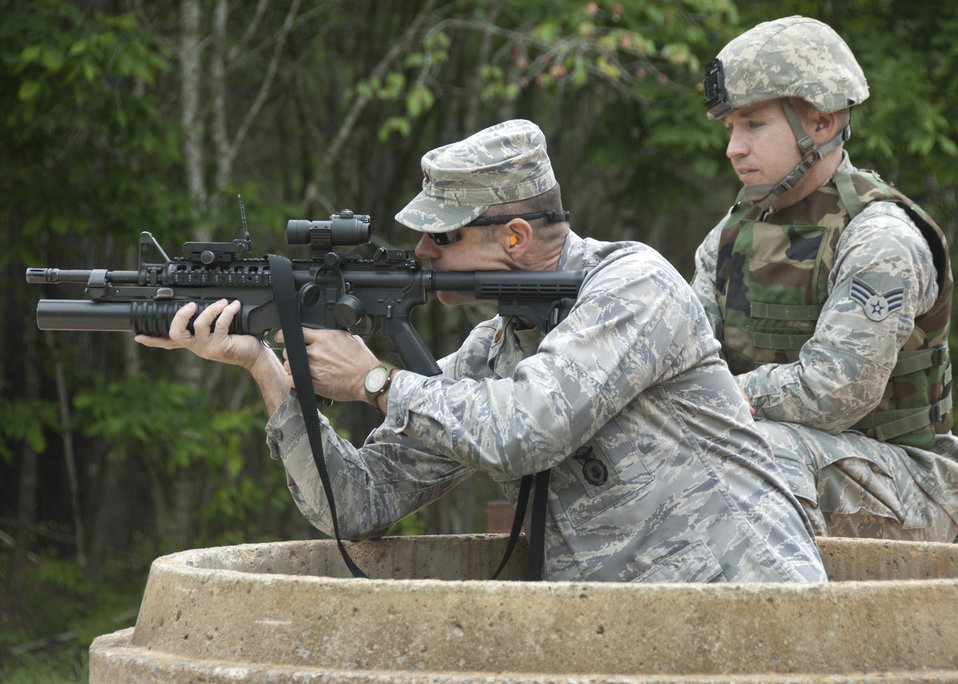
Heavy arms training

Maj. James Blanton trains with the M203 grenade launcher May 16, 2011, at Arnold Air Force Base, Tenn. Major Blanton is the commander of the 134th Security Forces Squadron.